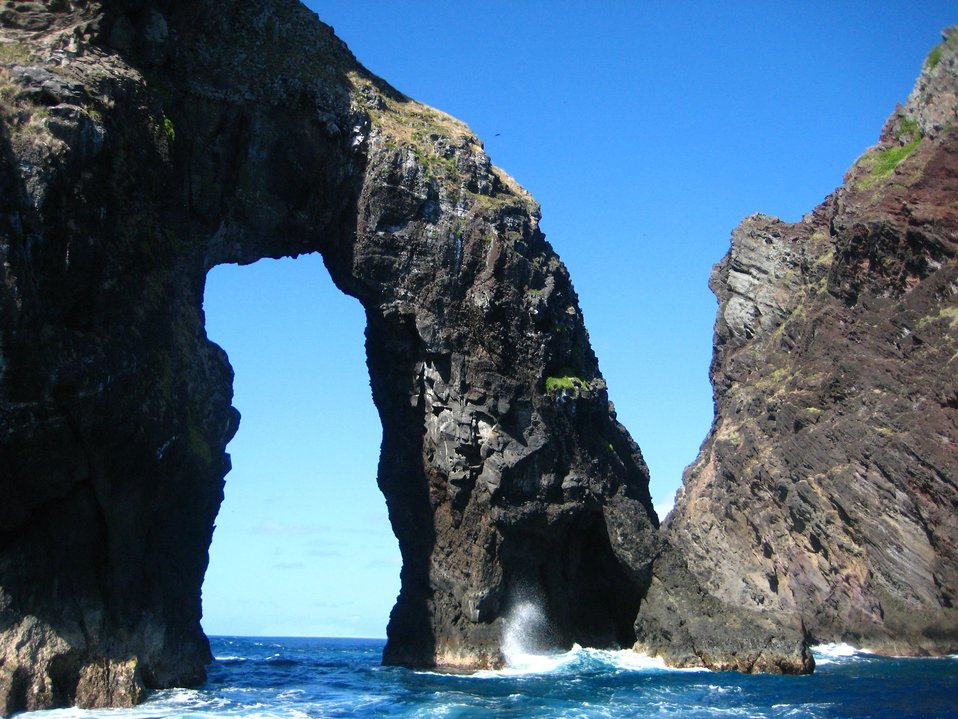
Beautiful rock arch